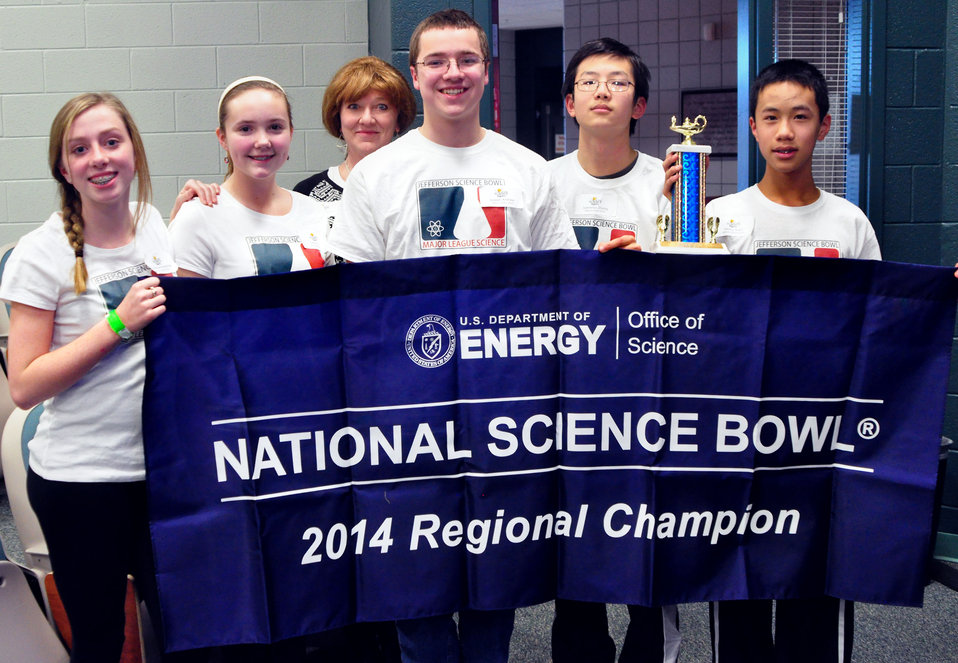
Jefferson Middle First Place DOE Middle School Science Bowl

14-017 DOE photo Lynn Freeny 2-1-2014 Oak Ridge Tennessee